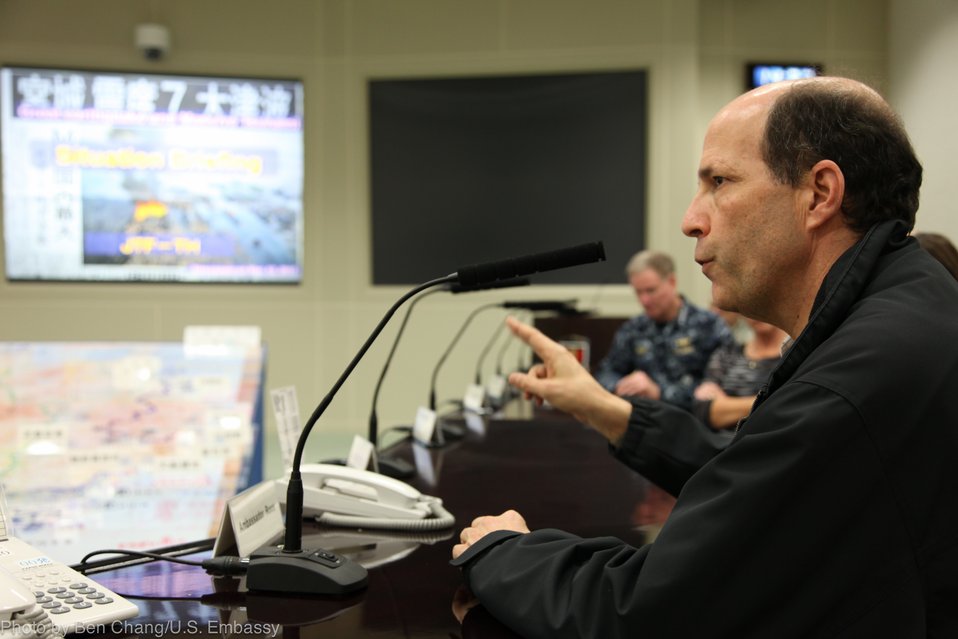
Ambassador Roos Receives a Disaster Relief Briefing From Japanese Officials

U.S. Ambassador to Japan John Roos receives a disaster relief briefing from Japanese officials in Sendai, Japan, on March 23, 2011.